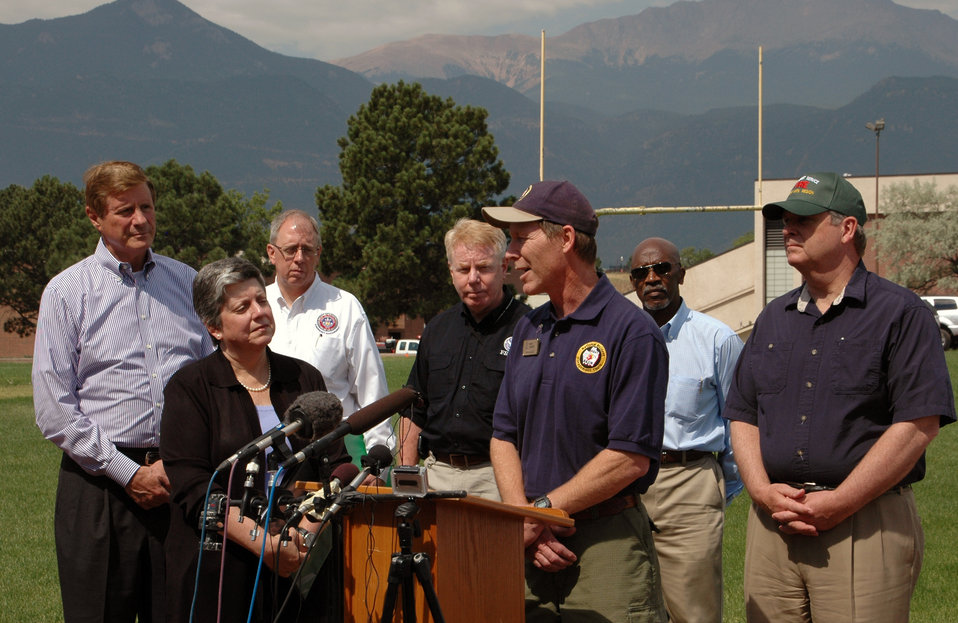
(L to R) Homeland Security Secretary Janet Napolitano, U.S. Forest Service Fire Incident Commander Rich Harvey and Agriculture Secretary Tom Vilsack respond to questions during a press conference held during their visit to the Waldo Canyon Fire near Colorado Springs, CO on Tuesday, July 3, 2012.